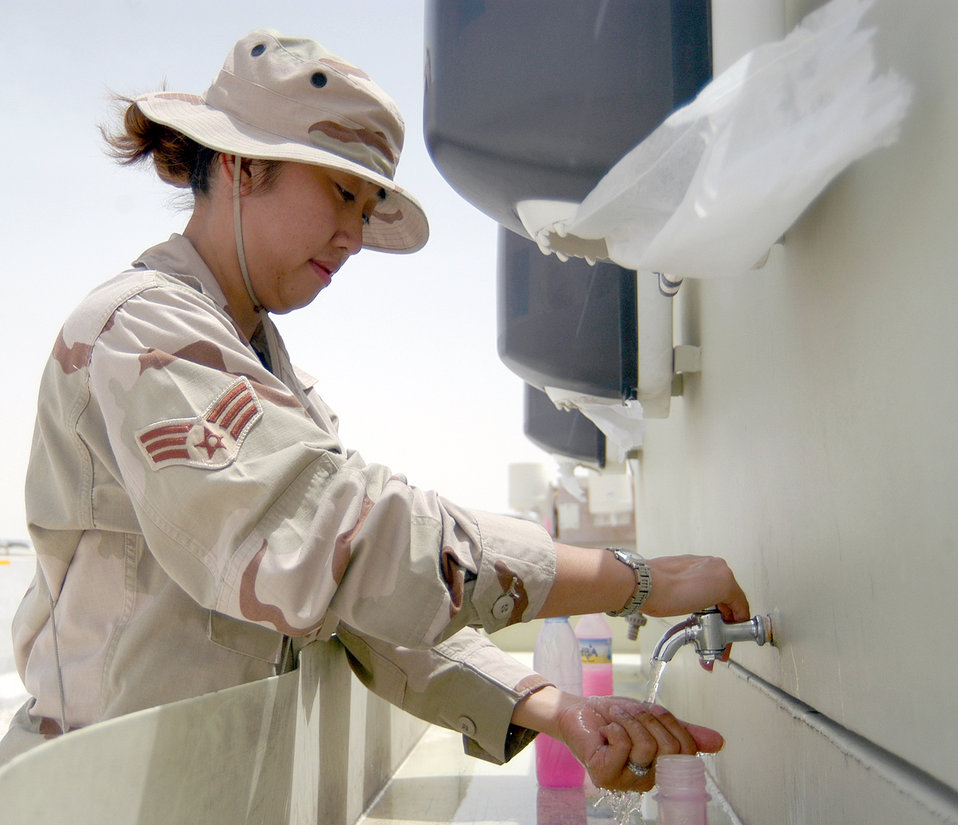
Scrub-a-dub dub

SOUTHWEST ASIA -- Senior Airman Liedhe Carpio washes her hands before eating at a dining facility at a forward-deployed location. Officials said washing hands with soap for at least 20 seconds reduces the spread of disease. Airman Carpio is assigned to the 379th Expeditionary Logistics Readiness Squadron. She is deployed from McChord Air Force Base, Wash.